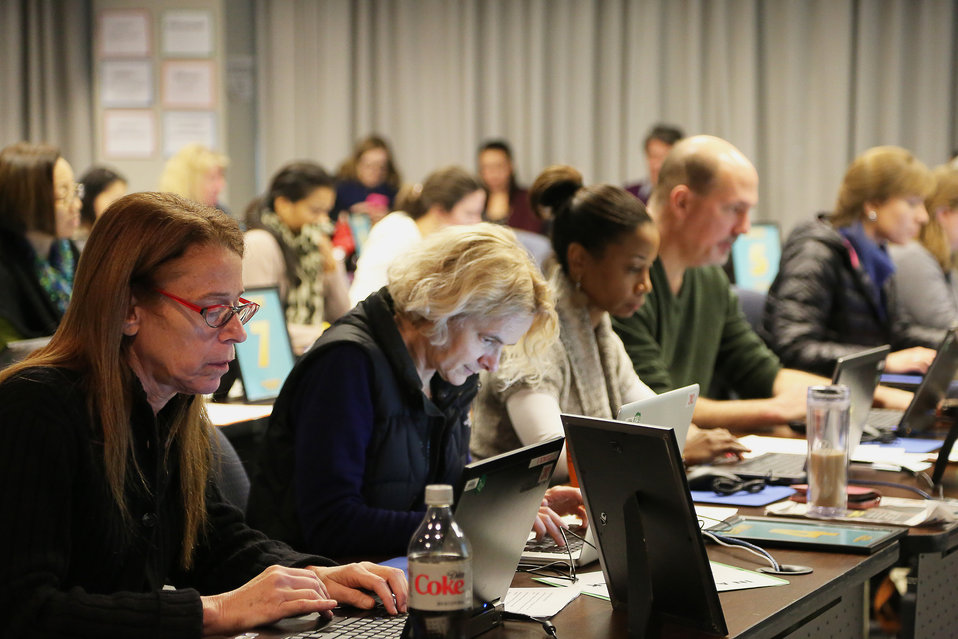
Dr. Nora Volkow and Fellow Scientists at Chat Day

Chat Day Event held by the National Institute on Drug Abuse during its National Drug Facts Week Jan. 27-Feb. 2, 2014. Scientists from NIDA and other agencies answered questions about drugs from teens around the world on Jan. 29th in Rockville, Maryland.